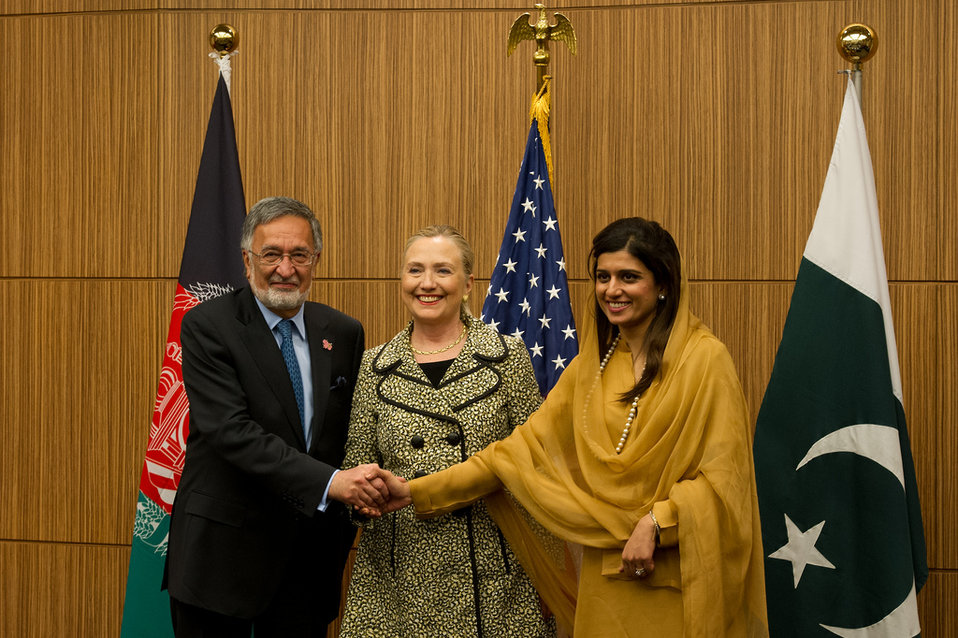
Secretary Clinton With Afghan and Pakistani Foreign Ministers Rassoul and Khar

U.S. Secretary of State Hillary Clinton participates in a meeting with Afghan Foreign Minister Zalmai Rassoul, left, and Pakistan Foreign Minister Hina Rabbani Khar, right, on the sidelines of the Tokyo Conference on Afghanistan in Tokyo, Japan, on July 8, 2012.